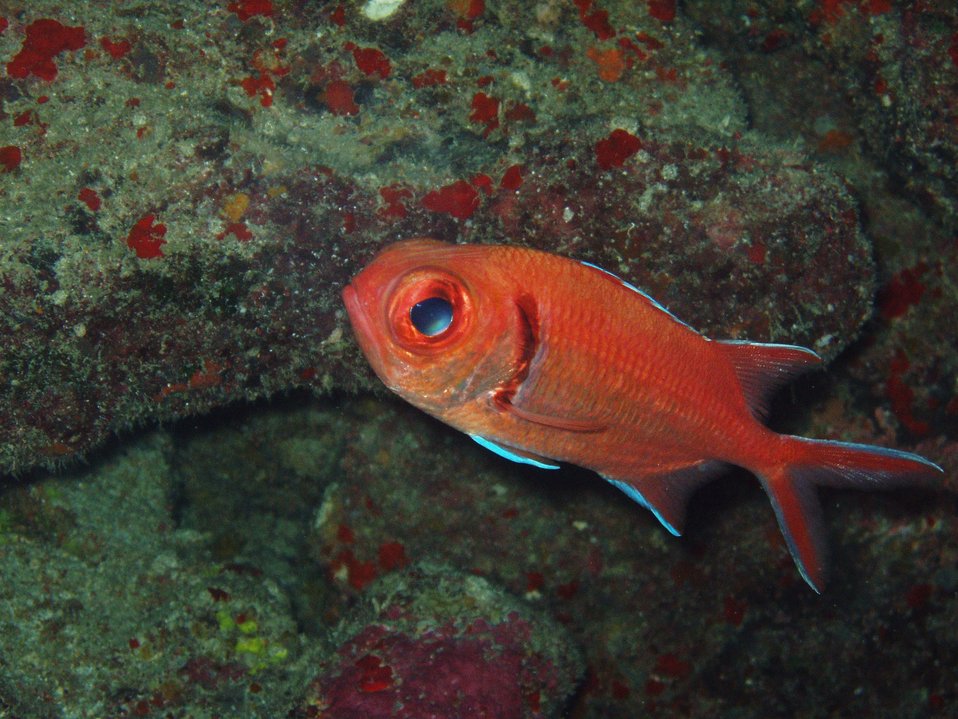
Blackbar soldierfish (Myripristis jacobus)